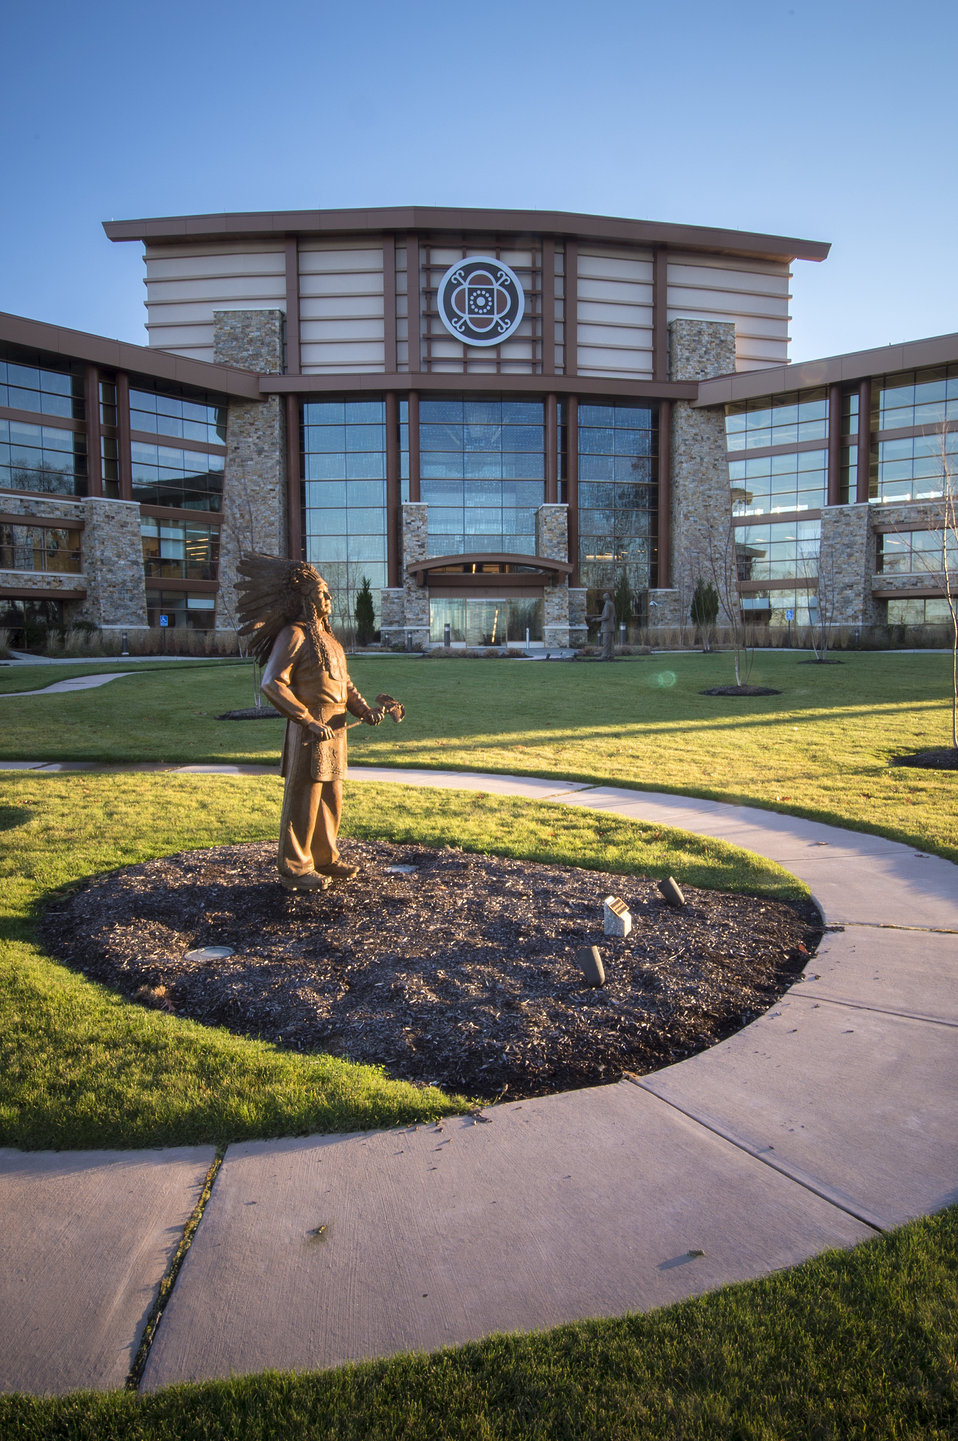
A U.S. Department of Agriculture (USDA) Rural Development (RD) Community Facility Loan was provided to the Mohegan Tribe for the construction of the Mohegan Tribe Community Center and Government Building in Uncasville, CT. USDA’s RD Community Facilities Programs makes and guarantees loans to develop essential community facilities in rural areas and towns of up to 20,000 in population. Loans and guarantees are available to public entities such as municipalities, counties, parishes, boroughs, and special-purpose districts, as well as to non-profit corporations and tribal governments. These funds can be used to construct, enlarge, or improve community facilities for health care, public safety, and public services. The Mohegan Tribe's newly completed Community Center and Government Building allows the tribal government to more fully and effectively administer the tribal government, health, housing and social programs of the Tribe and provide cultural resources and community gathering, and activities for its members. The 160,000 square foot building Center hosts an exhibit celebrating federal recognition, history of Mohegan Chiefs, a new Library and Archives space, Arts and Crafts room, gymnasium, and a new community room to enjoy food and family. The Center will continue the Tribe’s plan for growth and meeting the needs of its members. The ability to finance the project at reasonable rates through the USDA RD Community Facilities Programs ensures that the Tribal government more efficiently and effectively can manage the administration of essential government functions.